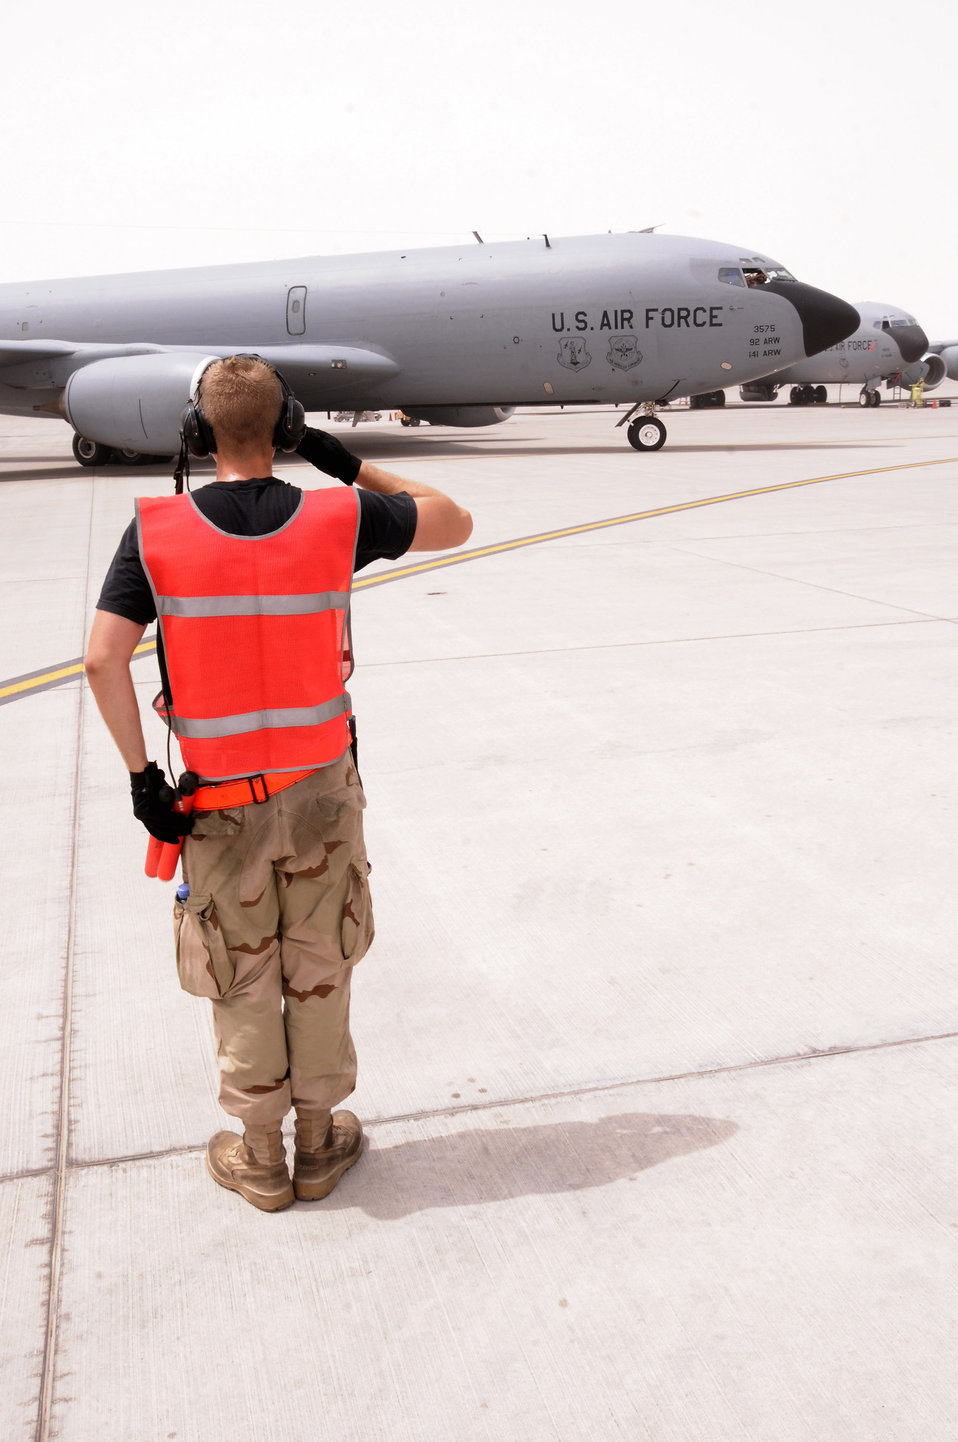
Gas and go

Airman 1st Class Derek Larue salutes a KC-135 Stratotanker he has just marshaled out of its parking spot Aug. 3 at a Southwest Asia air base. Members of the 340th Expeditionary Aircraft Maintenance Squadron refuel all types of bombers, fighters and other support aircraft engaged in operations Iraqi Freedom and Enduring Freedom and Combined Joint Task Force Horn of Africa. Airman Larue is assigned to the 340th EAXMS from Grand Forks Air Force Base, N.D.